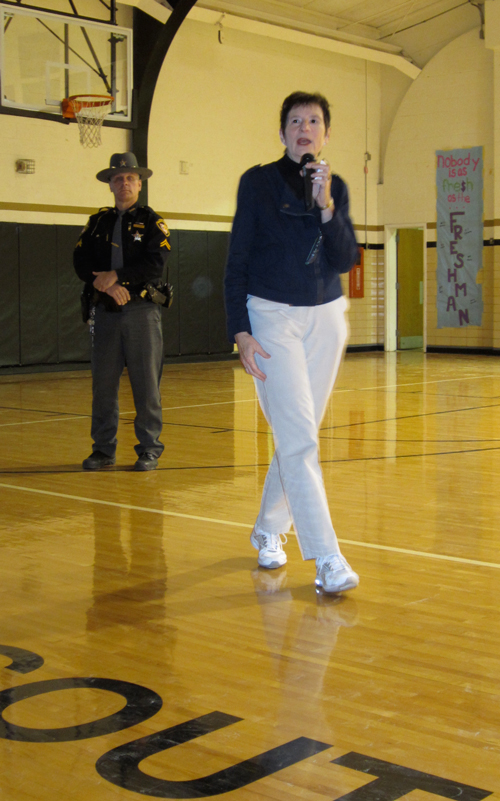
South Central High SADD Assembly Greenwich, OH

Speaker Peg Koupal from the Fisher Titus Medical Center Industrial Health Program speaks to students at NDFW assembly in Greenwich.